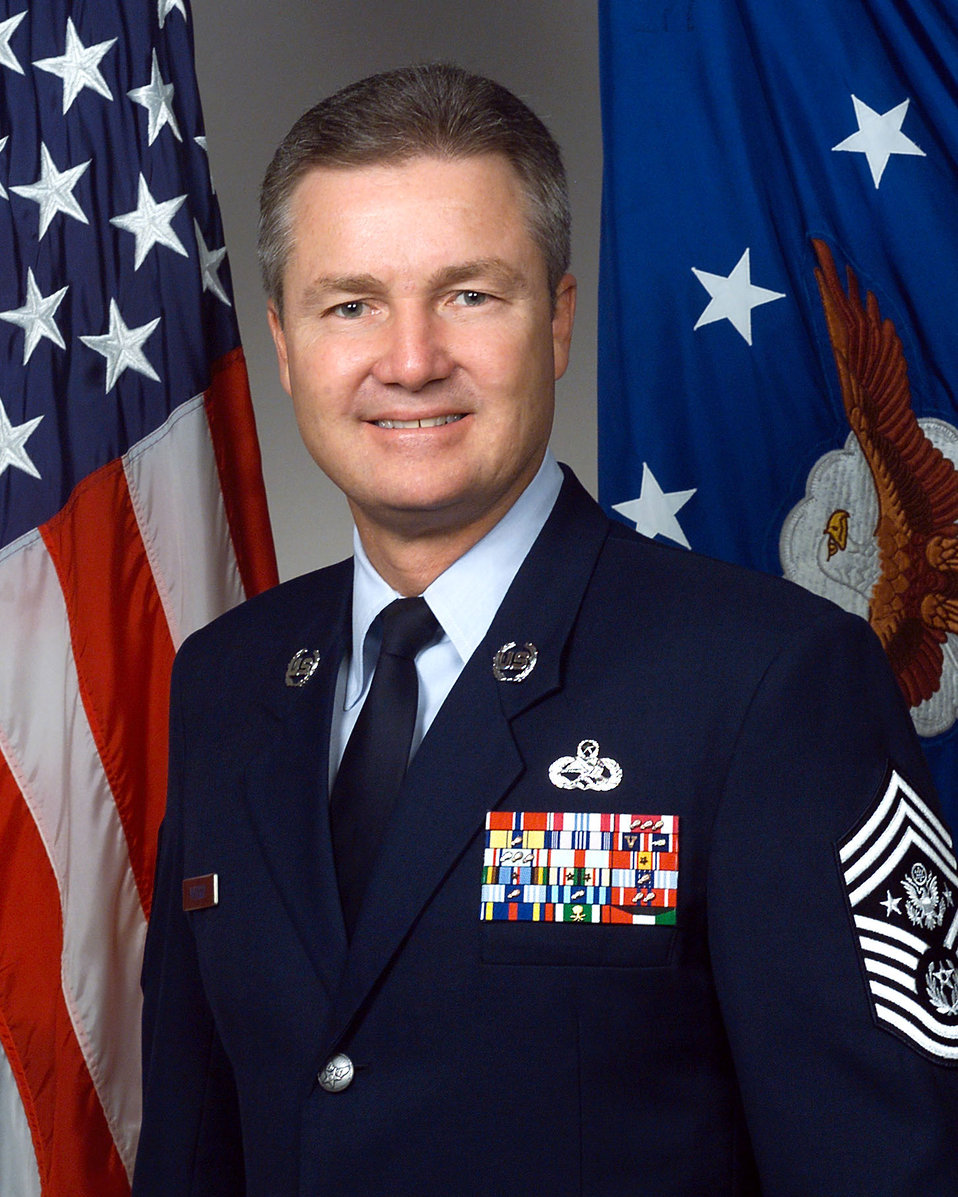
Chief Master Sergeant of the Air Force

CMSAF Gerald R. Murray